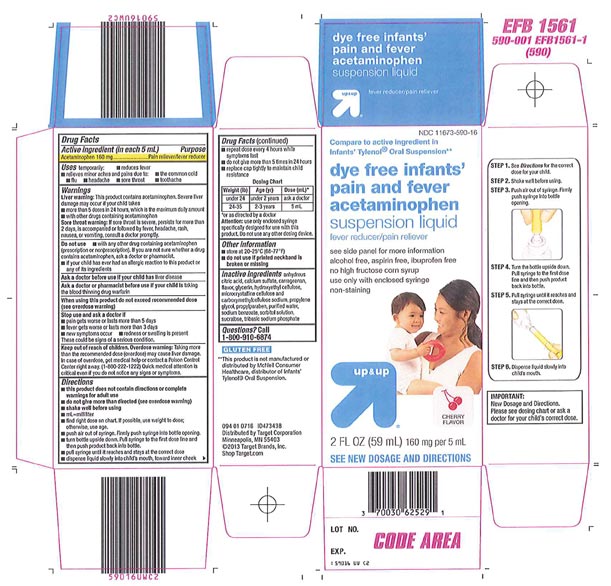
Recalled - Acetaminophen infant suspension liquid

November 1, 2013 – Product Recall – Perrigo Initiates Nationwide Voluntary Product Recall of Acetaminophen Infant Suspension Liquid, 160 Mg/5 Ml, Due to a Potential Defect with the Co-packaged Oral Syringe.